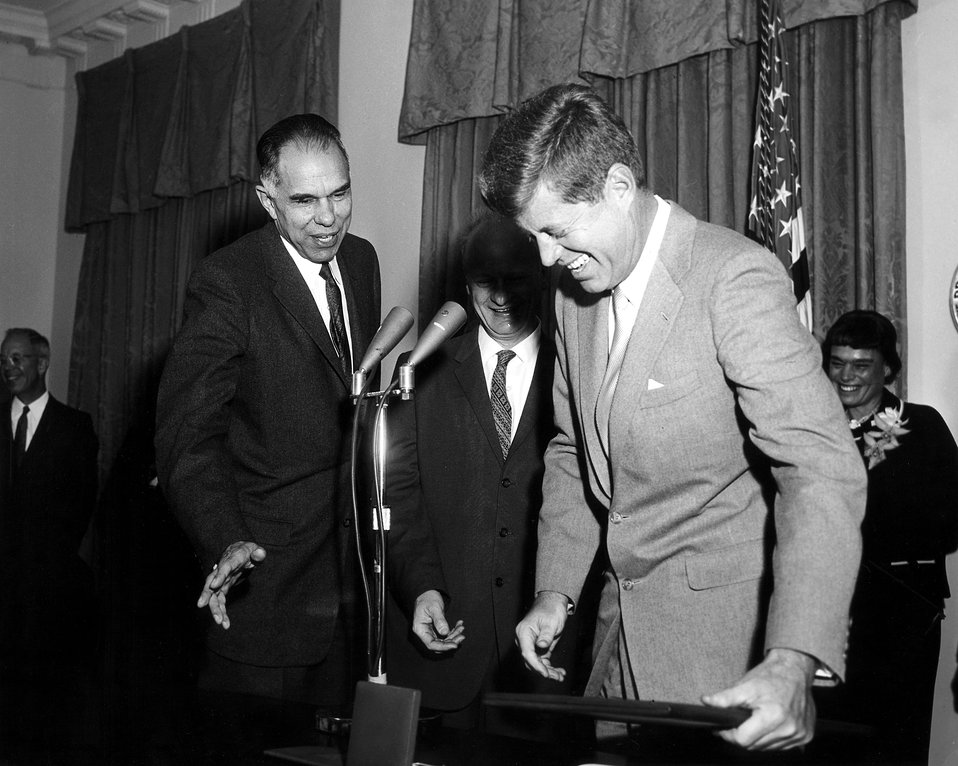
Hans Bethe receiving the Fermi Award in 1961.